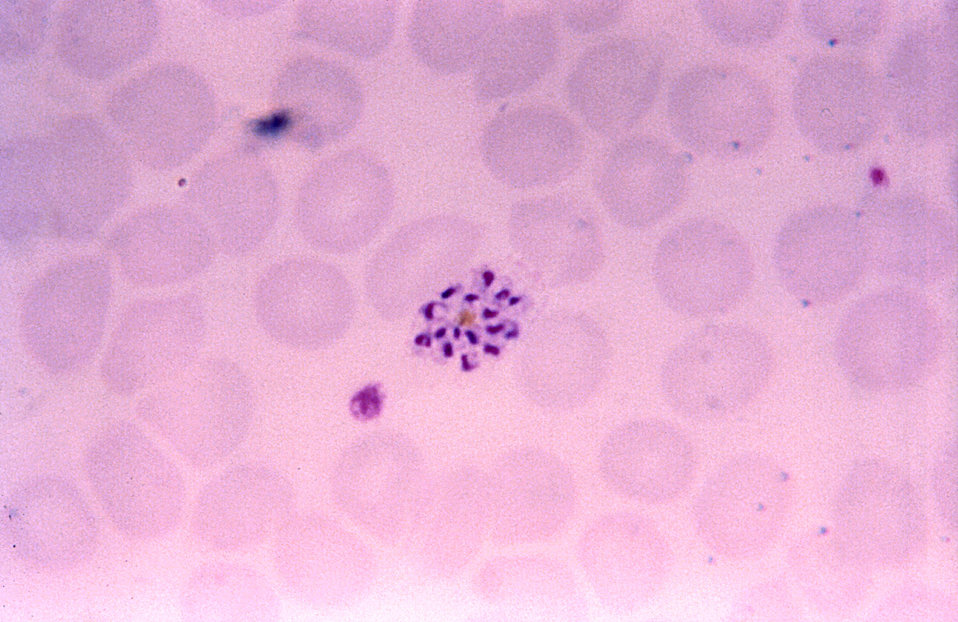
This thin film Giemsa stained micrograph depicts a mature Plasmodium vivax schizont containing 16 merozoites.